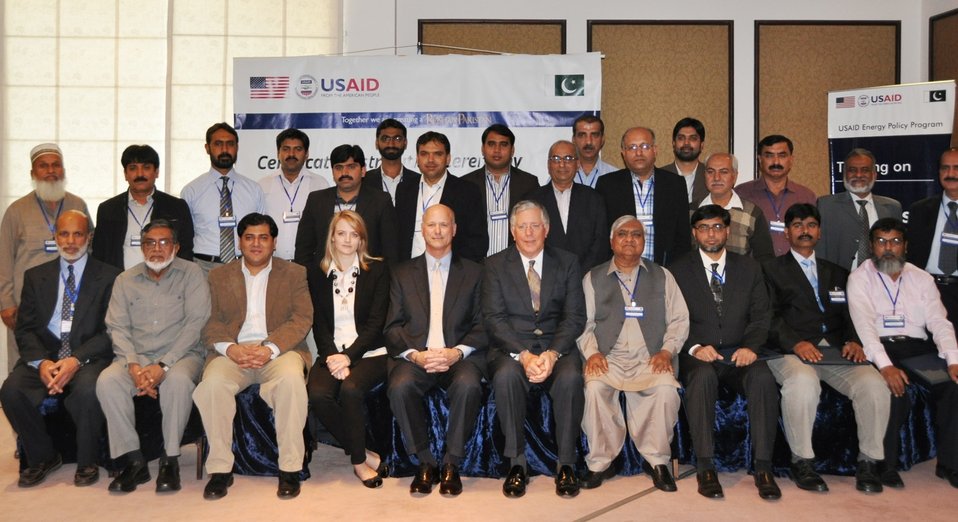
Group photograph of trainees with Tim Moore, Acting Director USAID Energy Office and Jimmy Hicks, Chief of Party, Energy Policy Program